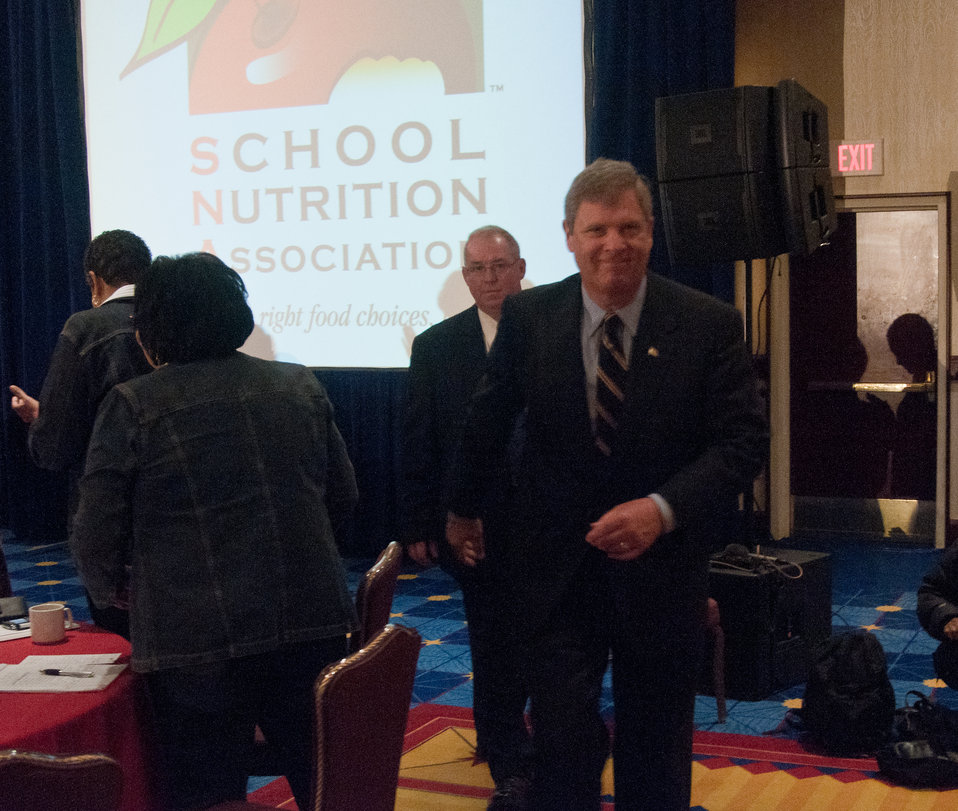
U.S. Department of Agriculture Secretary Tom Vilsack leaves with a standing ovation after speaking and taking questions during the School Nutrition Association’s closing general session of their 39th annual Legislative Action Conference at the J.W. Marriott Hotel in Washington, D.C., on Wednesday, March 9, 2011. The theme of the Secretary Vilsack’s speech was “The Realities of Implementing New Meal Patterns and Operational Requirements.” Of the many things he spoke about, he also shared with the audience how his motivation came from how personally important it was to him, that his adopted mother made a lunch for him everyday he went to school despite the challenges of her alcoholism and family struggles. He also talked about the Healthy, Hunger-Free Kids Act of 2010 (Public Law 111-296 and how chefs were involved in the development of the USDA’s proposed updated nutrition standards for school meals development.